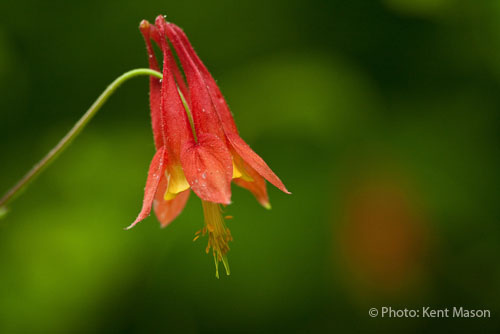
Columbine